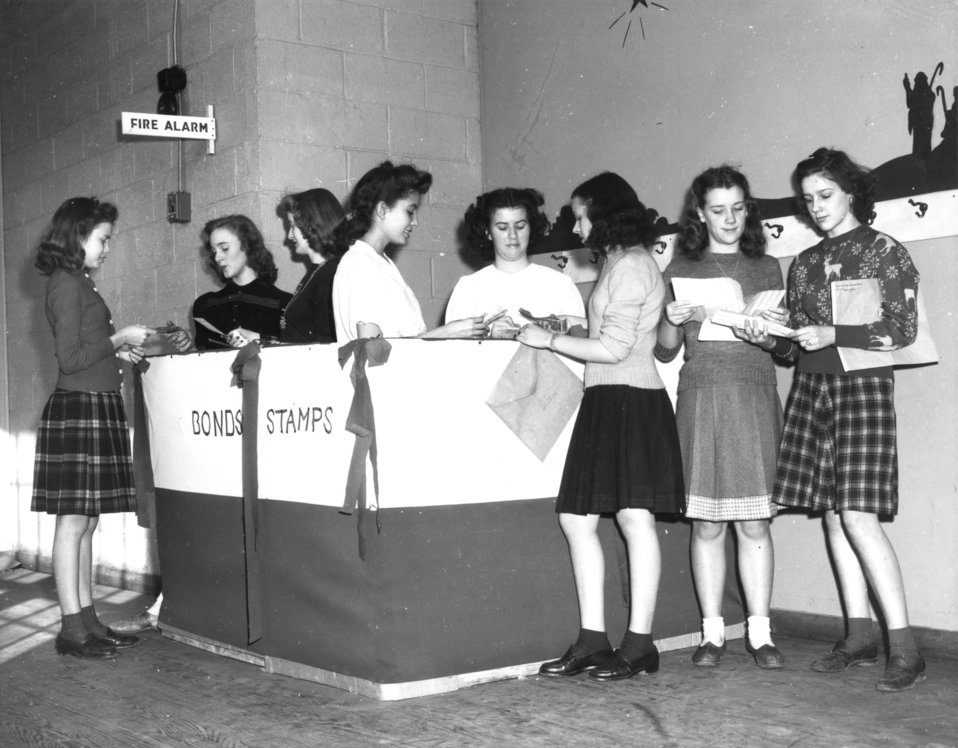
Schools at Oak Ridge